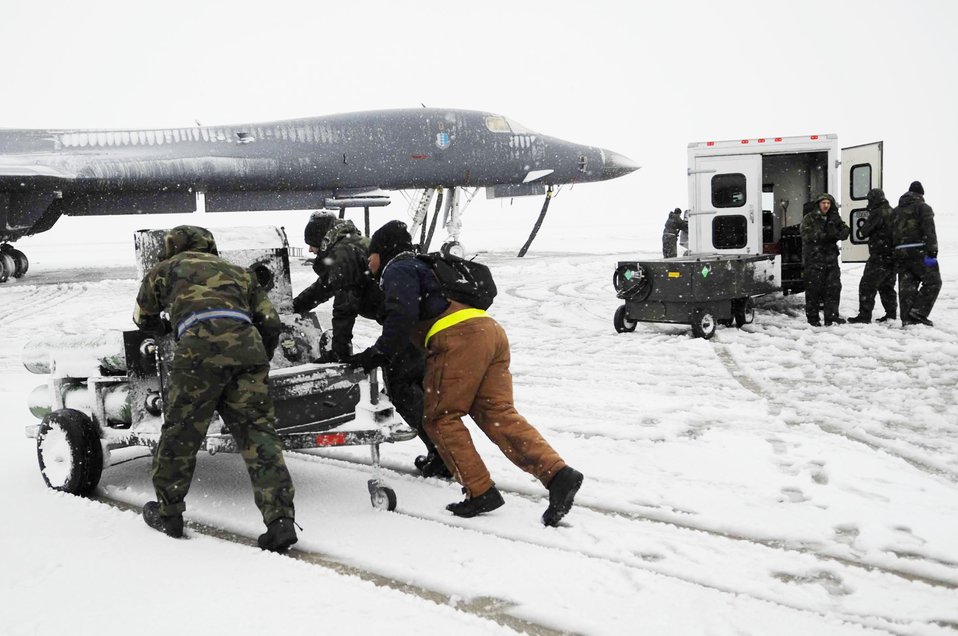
Cold and snow no obstacle for Ellsworth maintainers

Members of the 28th Maintenance Group work in inclement weather to keep the B-1 Lancer ready for takeoff Oct. 29, 2009 on the Ellsworth Air Force Base, S.D. flightline. Ellsworth maintainers are on constant standby to assure all aircraft are ready.